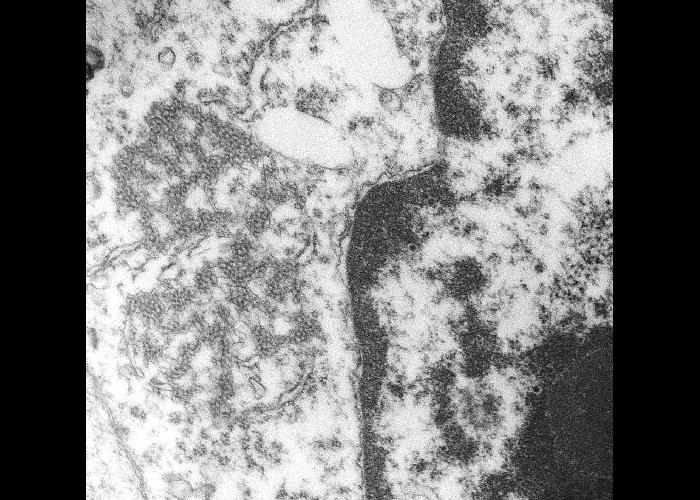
This transmission electron micrograph (TEM) depicts tubuloreticular structures in cytoplasm of lymph node lymphocyte.